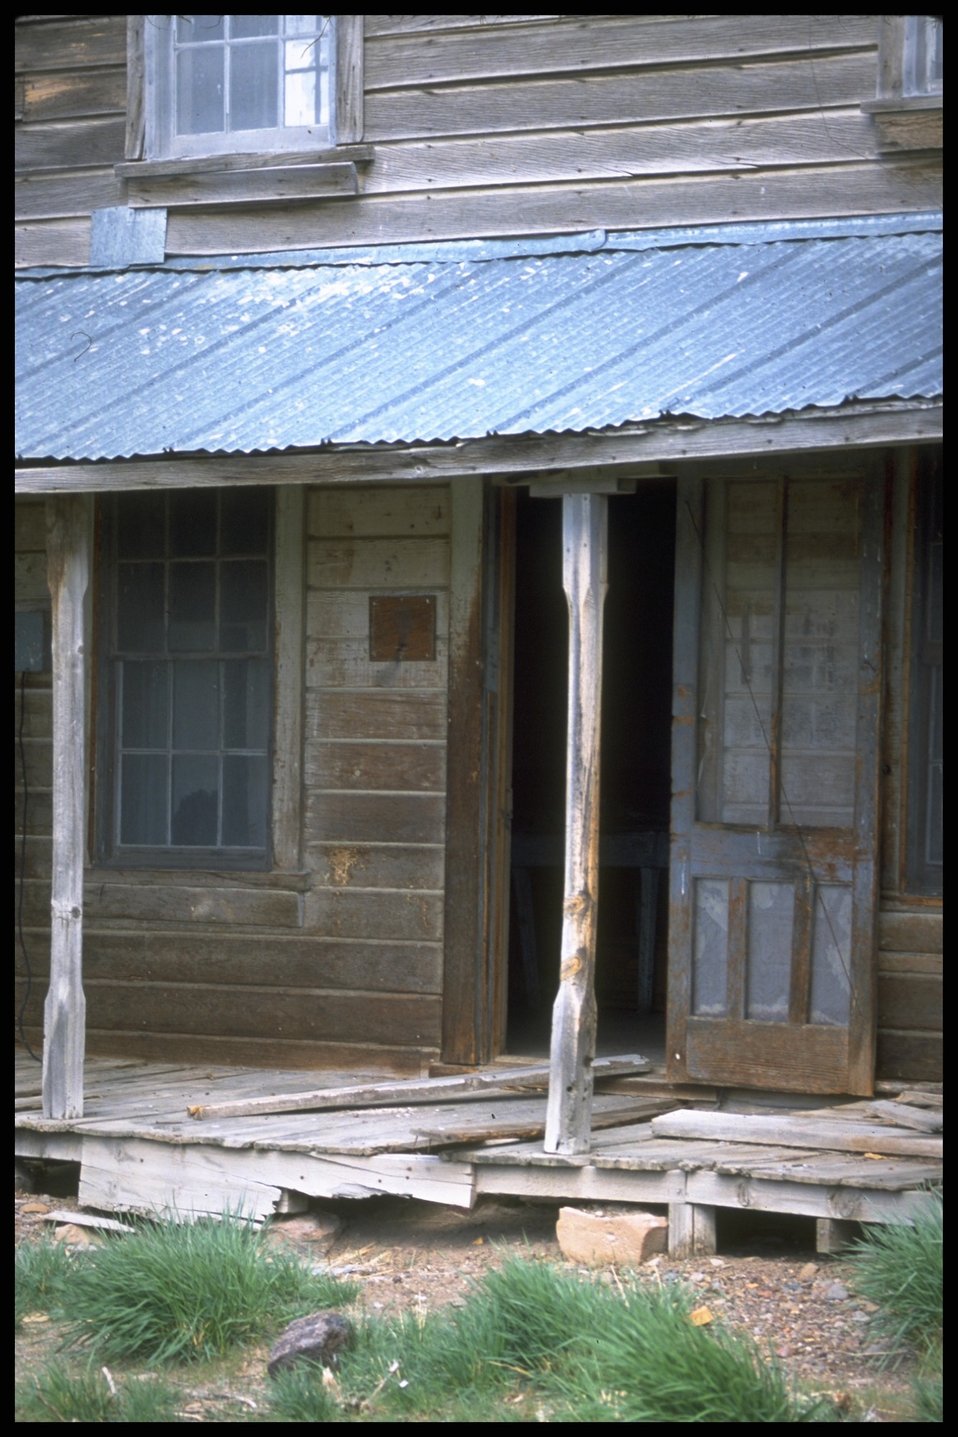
Old house at Shirk Ranch, Lakeview District.